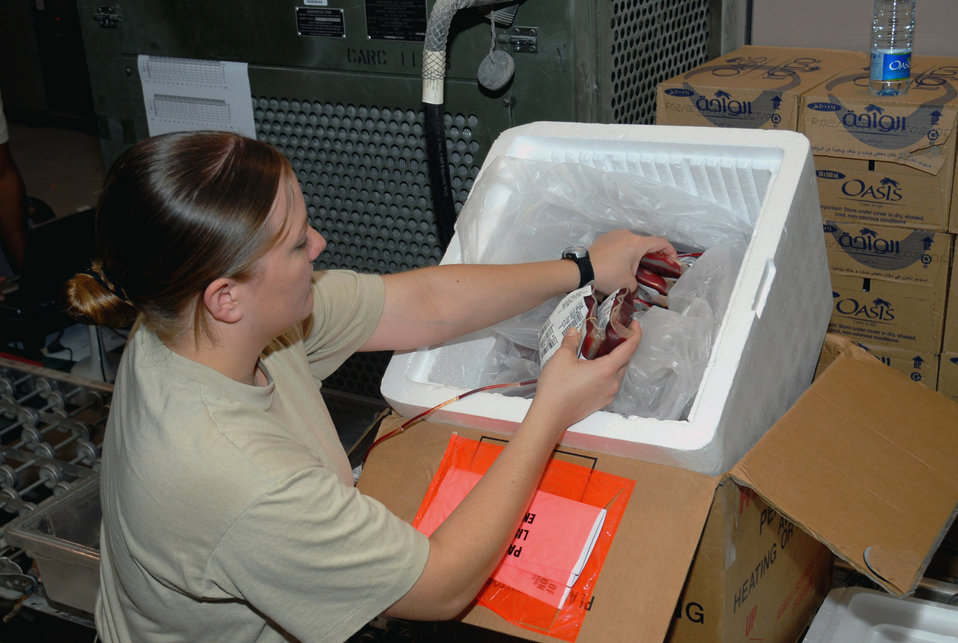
Pumping blood from the 'heart'

Senior Airman Beth Gunn packs red blood cells Nov. 20 for a shipment from her Southwest Asia base to Balad Air Base, Iraq. Airman Gunn is assigned to the 379th Expeditionary Medical Group's blood transshipment center and is deployed from Langley Air Force Base, Va. The BTC ships blood products to Bagram AB, Afghanistan, and Balad as well as the Horn of Africa and Naval ships in the Persian Gulf.